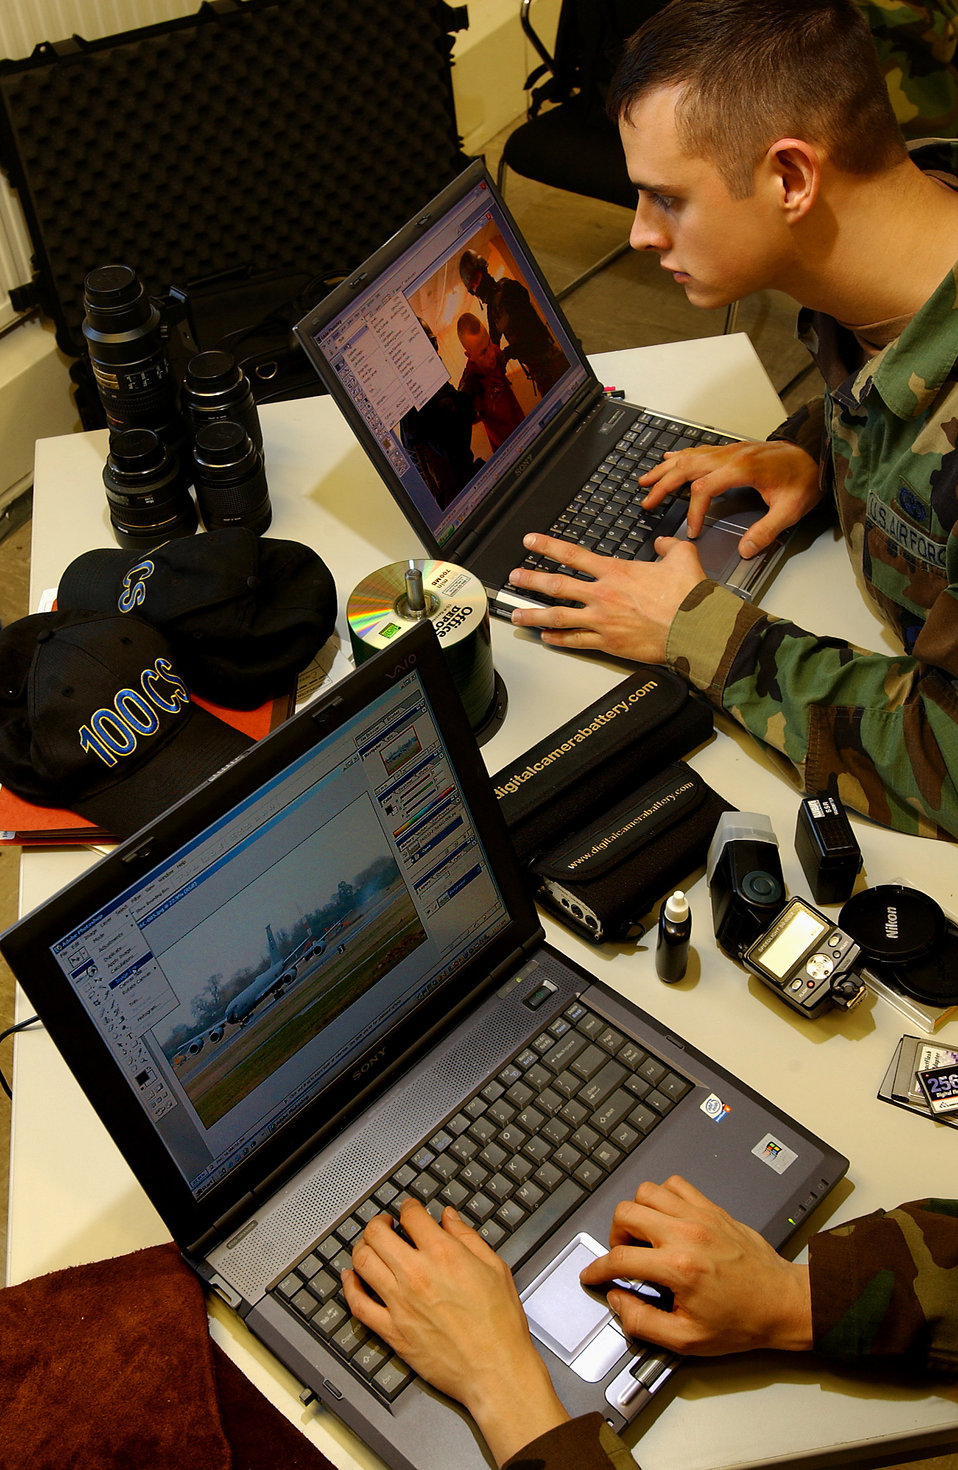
Photo editors

ROYAL AIR FORCE FAIRFORD, England -- Airman 1st Class Franklin Perkins (right) and Staff Sgt. Jeanette Copeland edit images on laptop computers here April 19. Airman Perkins and Sergeant Copeland are both photographers with the 100th Communications Squadron at Royal Air Force Mildenhall, England.